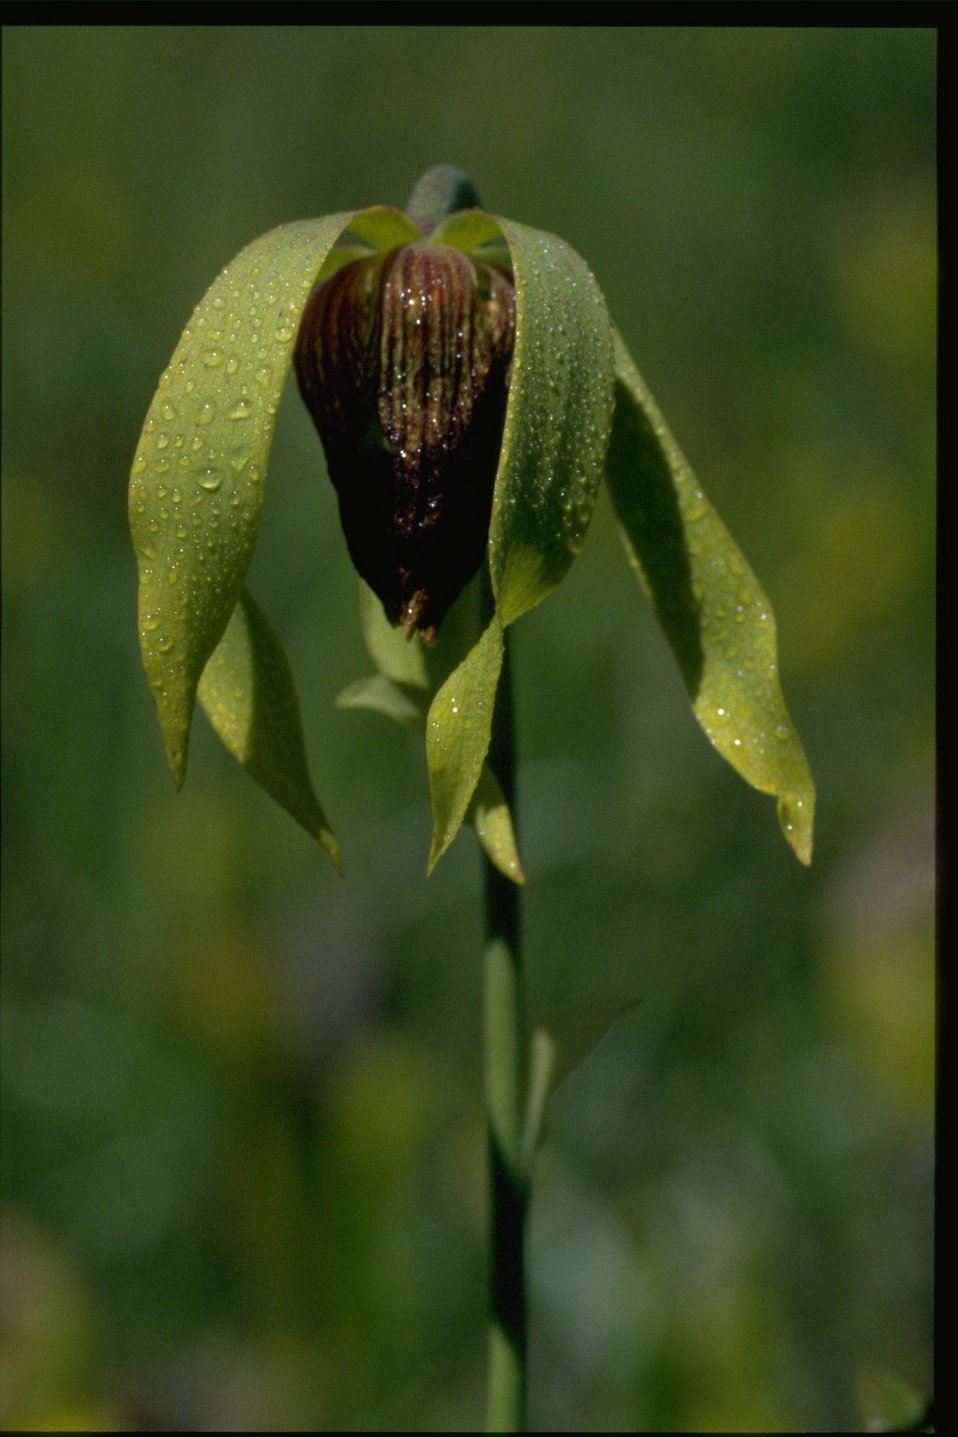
Closeup shot of Darlingtonia californica.